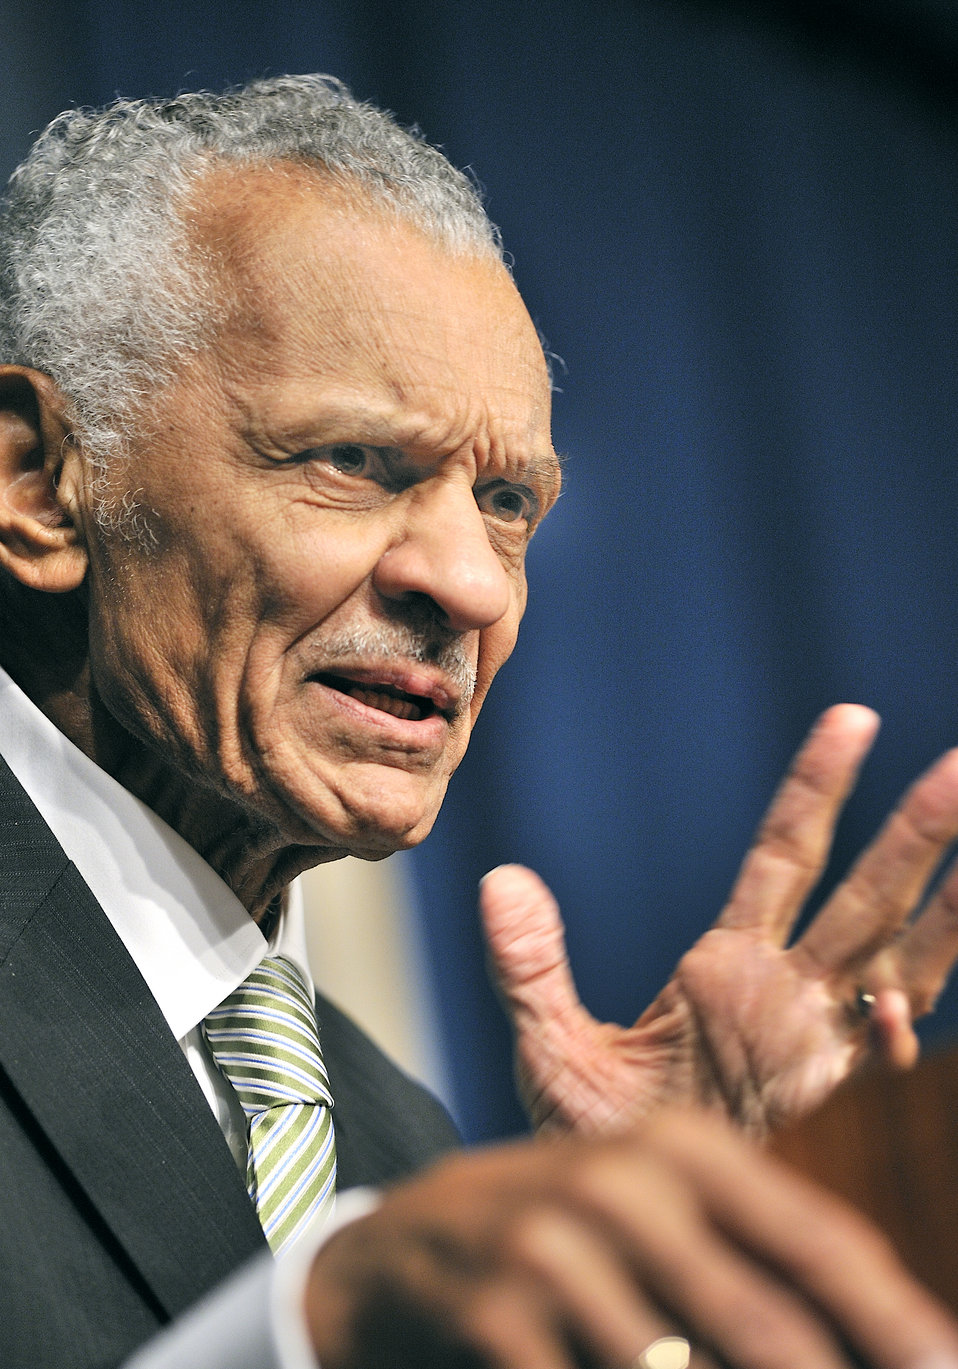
Martin Luther King Jr. Day Celebration at DOE headquarters.